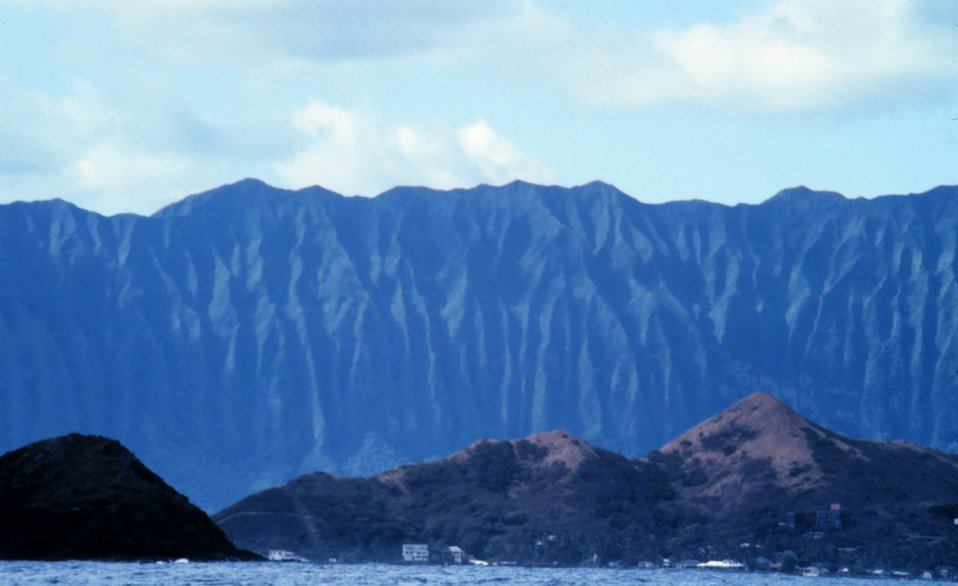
View of Koolau Range from offshore Makapu Point.